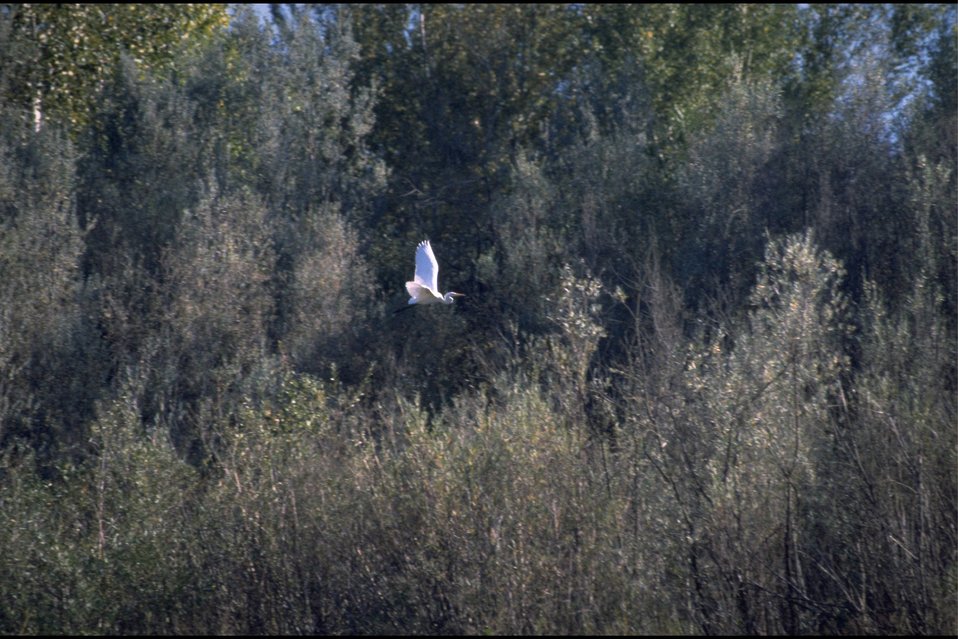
Rogue River - Hellgate Recreation Area, Egret.